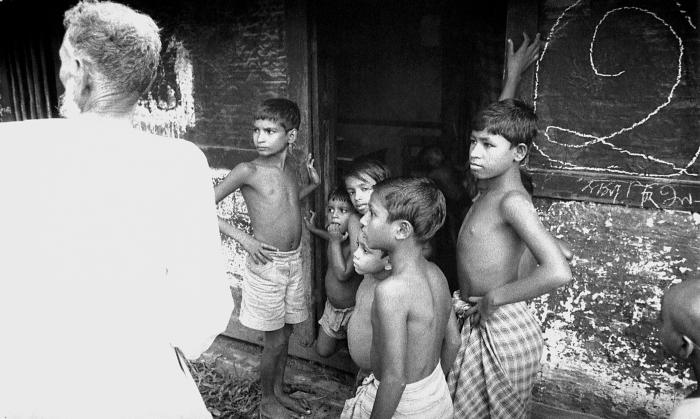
This was a typical village home that was being visited by an elderly volunteer smallpox eradication team member. He'd been greeted by a group of children about to be questioned, and educated by the volunteer about the signs and symptoms of smallpox. Such volunteers would discuss the 'smallpox card' image showing a smallpox case example, with village residents, which included adults and children. The 'smallpox card' not only presented an example of the disease, but it described the reward associated with ones discovery of a smallpox case, and asked if one knew of any such cases. During these country wide searches for smallpox, each one of the 12 million homes had to be visited, in order to show residents the smallpox case photograph, as well as ask pertinent, investigative questions.